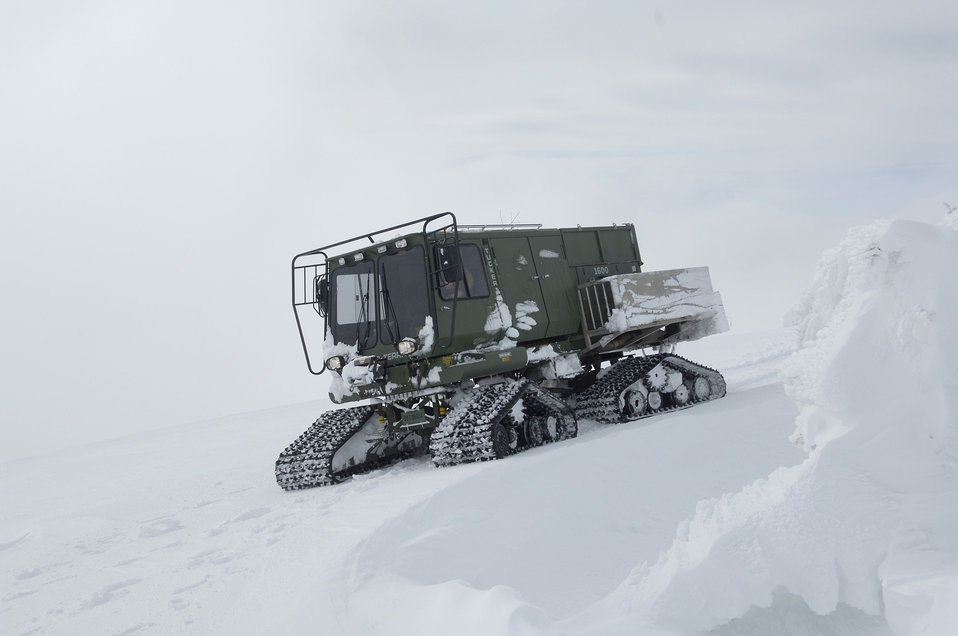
Fairchild Airmen climb ice-covered tower to retain communications

Transmission systems radio Airmen with the 92nd Communications Squadron and their guide from 336th Training Group get stuck in their enclosed all-terrain vehicle on their way up to a radio tower on the Calispell Mountain Peak in Cusick, Wash., Feb. 16, 2011. The vehicle got stuck a quarter mile away from the tower, which they have to de-ice throughout the year to maintain radio communications for the 336th Training Group at Fairchild Air Force Base, Wash., and local law enforcement. The Airmen made their way up to the tower by shoveling snow off the path.